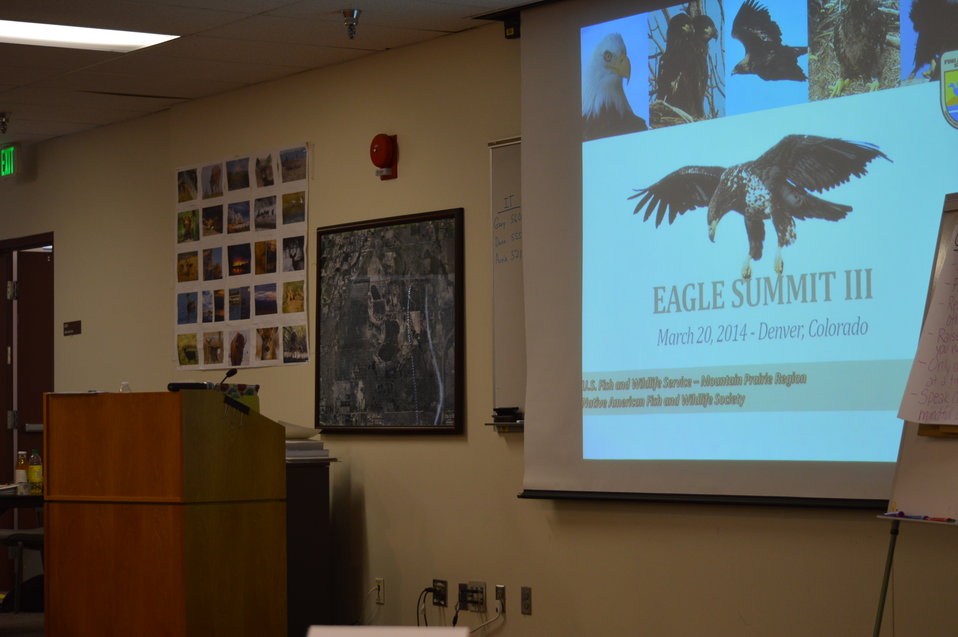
Eagle Summit III

Presentation at the Eagle Summit III in Denver, Colorado on March 20, 2014 at the Rocky Mountain Arsenal National Wildlife Refuge.